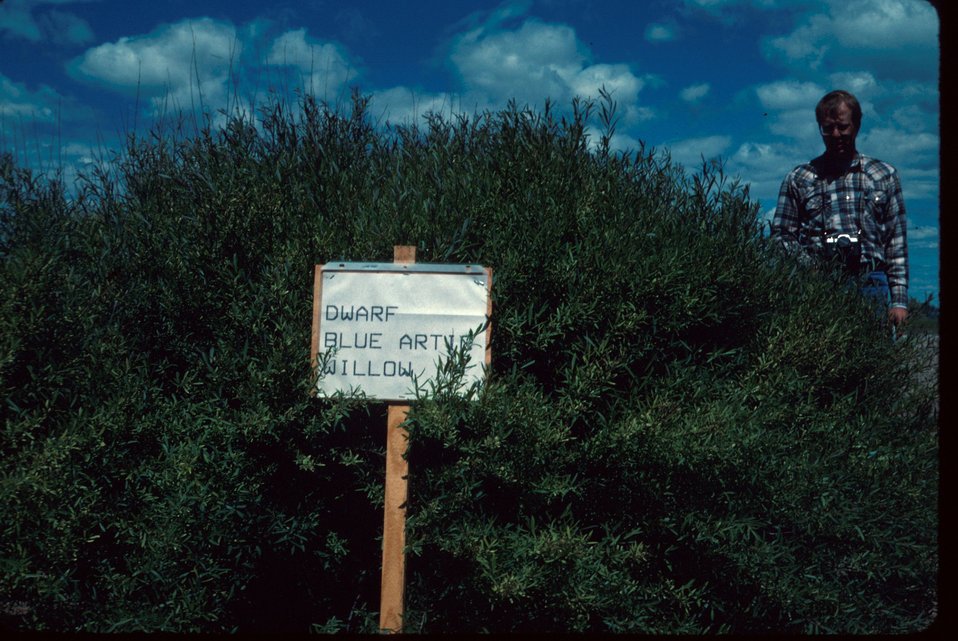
Dwarf Blue Arctic Willow Brush